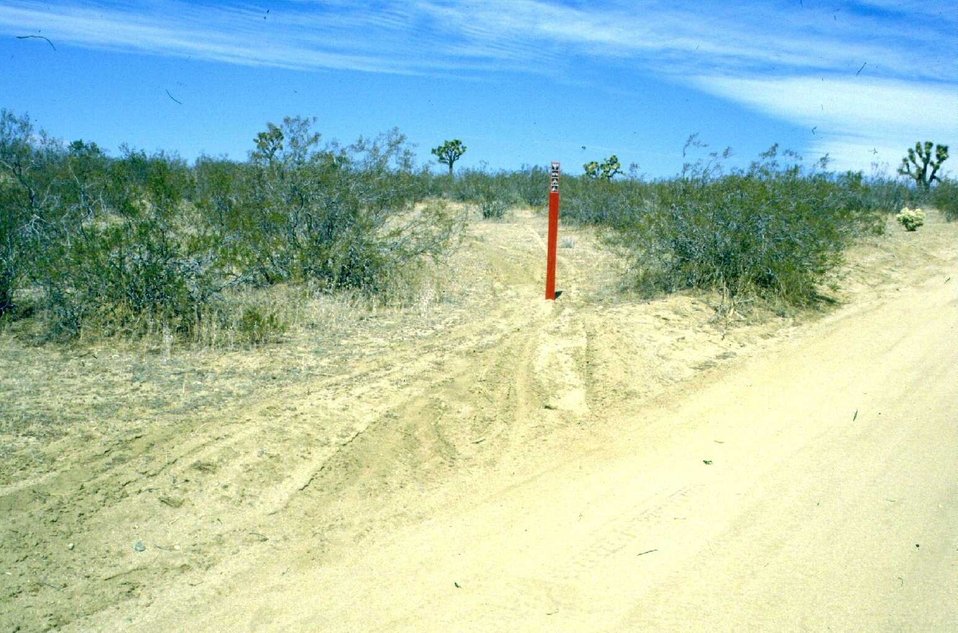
Multiple vehicles going off designated route around red route closed sign.